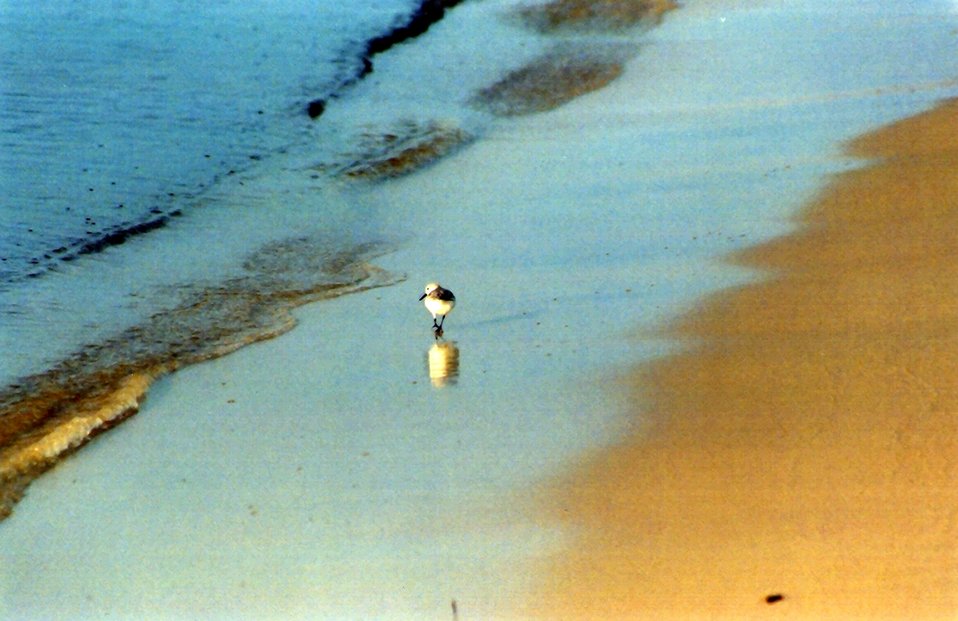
A lone sandpiper patrolling the edge of the surf line in search of dinner.